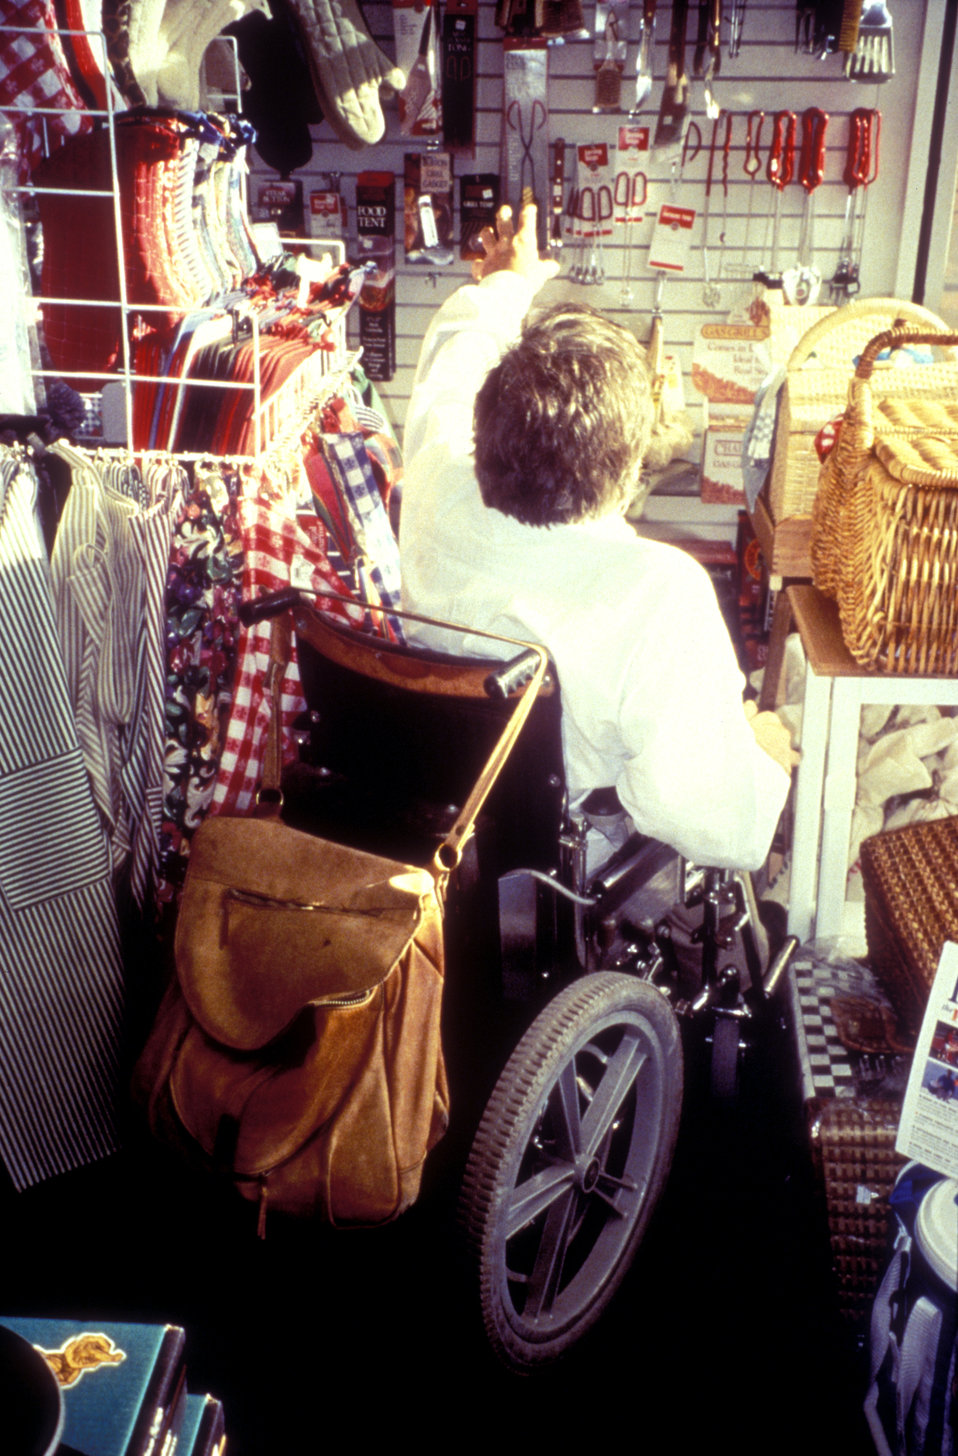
This 1988 image depicted a man seated in his motorized wheelchair, while browsing a retail store's inventory, which appeared to be cooking and picnicking clothing, utensils and accessories. In designing, and laying out the store's merchandise, consideration was not given to the possibility of mobility-challenged patrons entering the establishment, therefore, the store was congested, providing little in the way of room for movement, which made browsing difficult even for the unchallenged. It was virtually impossible for this man to maneuver his wheelchair adequately in order to partake in an enjoyable, or efficient shopping experience. Had this situation been studied with forethought, a better shopping experience would have been had by all visitors, and probably enhanced the store's revenue stream dramatically.